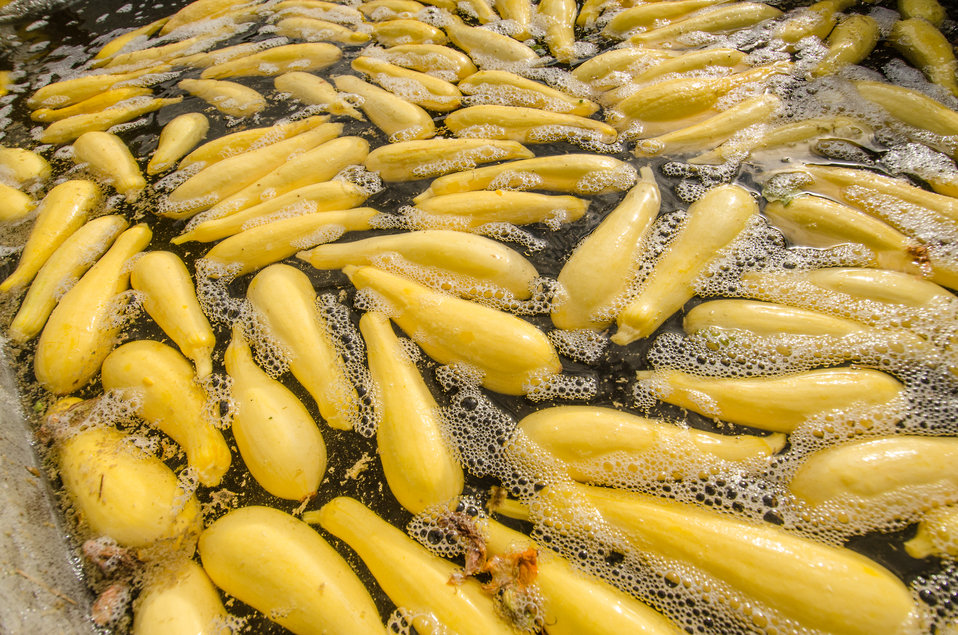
Migrant workers rinse and pack just-picked yellow squash on a processing trailer at Kirby Farms in Mechanicsville, VA on Sep. 20, 2013. Kirby Farms is a third-generation family farm that covers 500 acres, and generates produce and grains on a year-around operation.